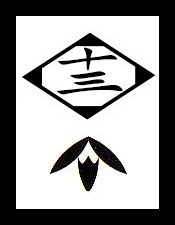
Español: Insignia y logo de escuadron shinigami de Bleach